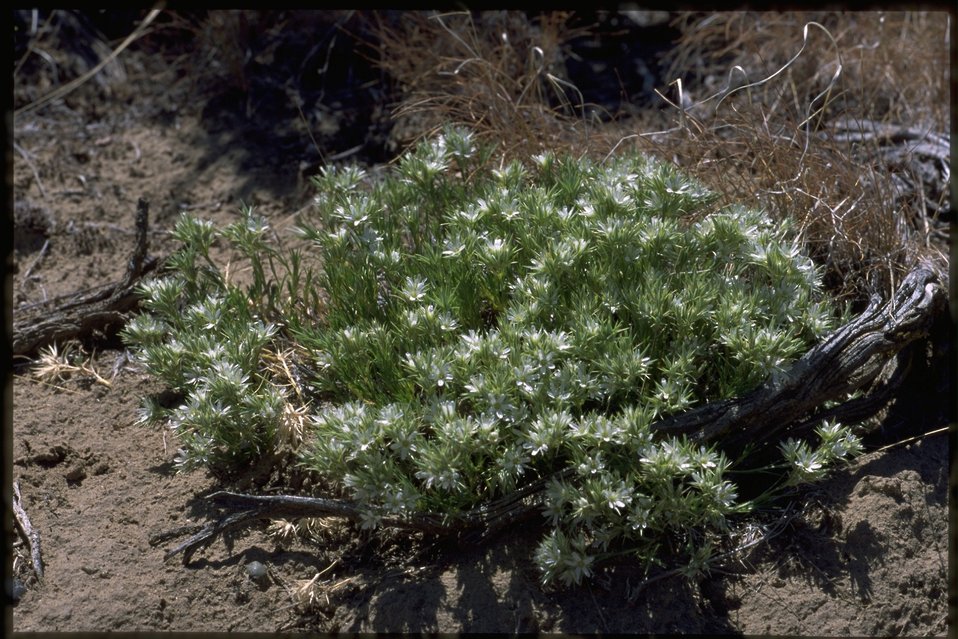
Medium shot of Polemoniaceae.